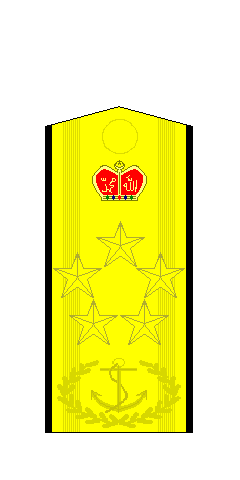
Rank insignia for Admiral of the Fleet (Malayasia)